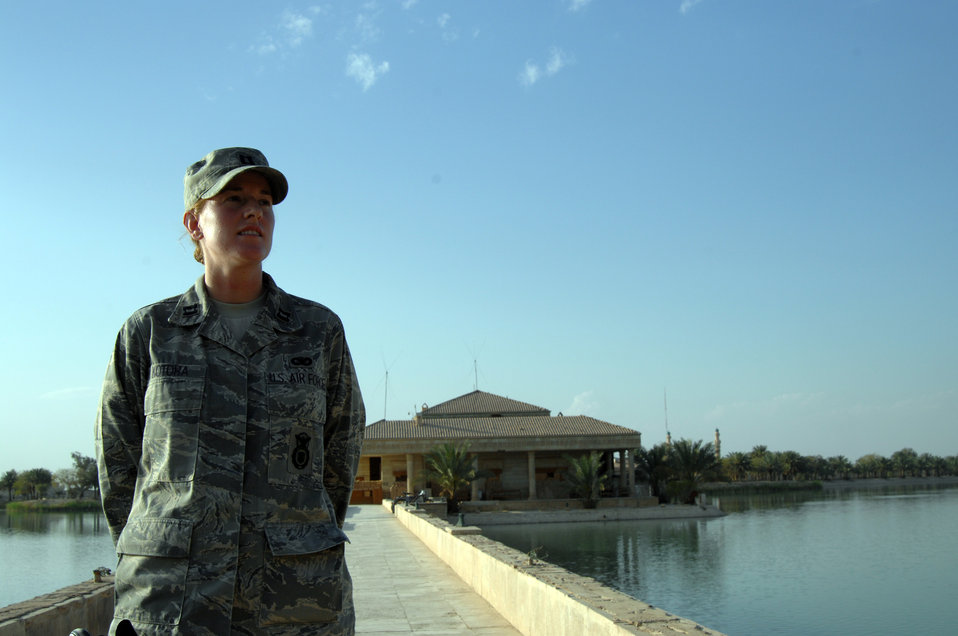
Airman coordinates air operations for Iraqi detainees

Capt. M. Kathryn Kotora is responsible for coordinating all air travel for Iraqi detainees at multiple detention facilities throughout Iraq. During her tenure here, she has planned, scheduled and coordinated more than 250 air missions to include 48 detainee flights and has transferred more than 17,000 detainees. Captain Kotora is a Joint Task Force 134 J3 Future Ops Air officer at Camp Victory, Iraq.